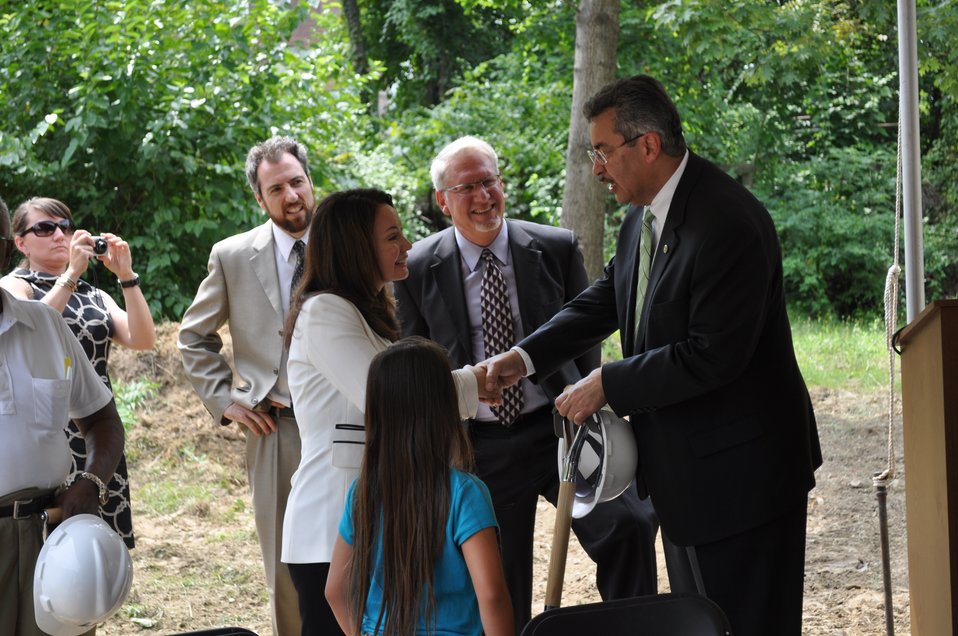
Treasurer Rios at a groundbreaking on new Vida Senior Residence funded in part by the Recovery Act, 7/27/2010

Treasurer Rosie Rios is greeted by Angel Luis Irene, Executive Director of Vida Senior Centers at the groundbreaking for Vida Senior Residences in D.C.